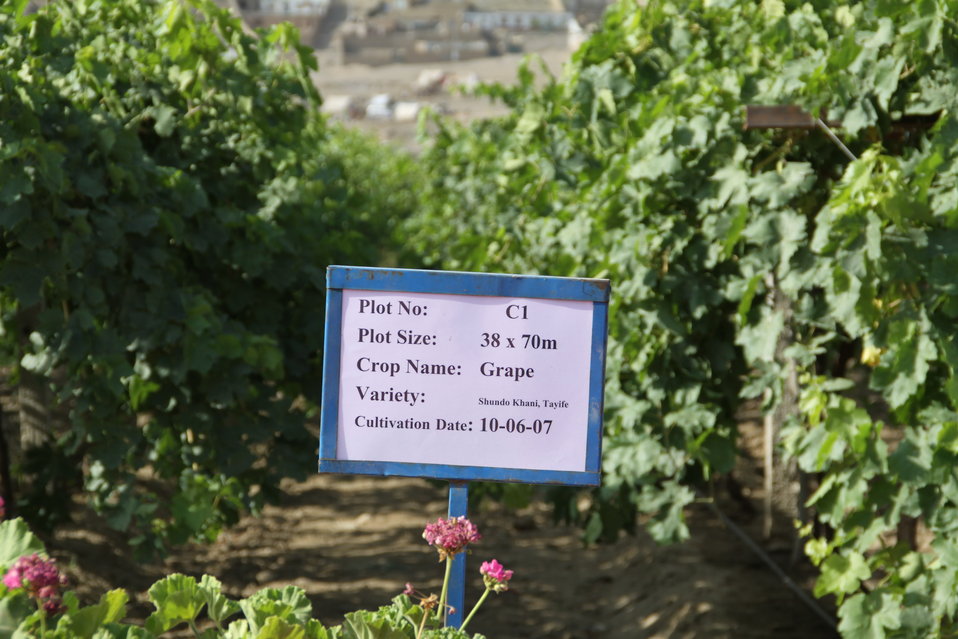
Badam Bagh Farm